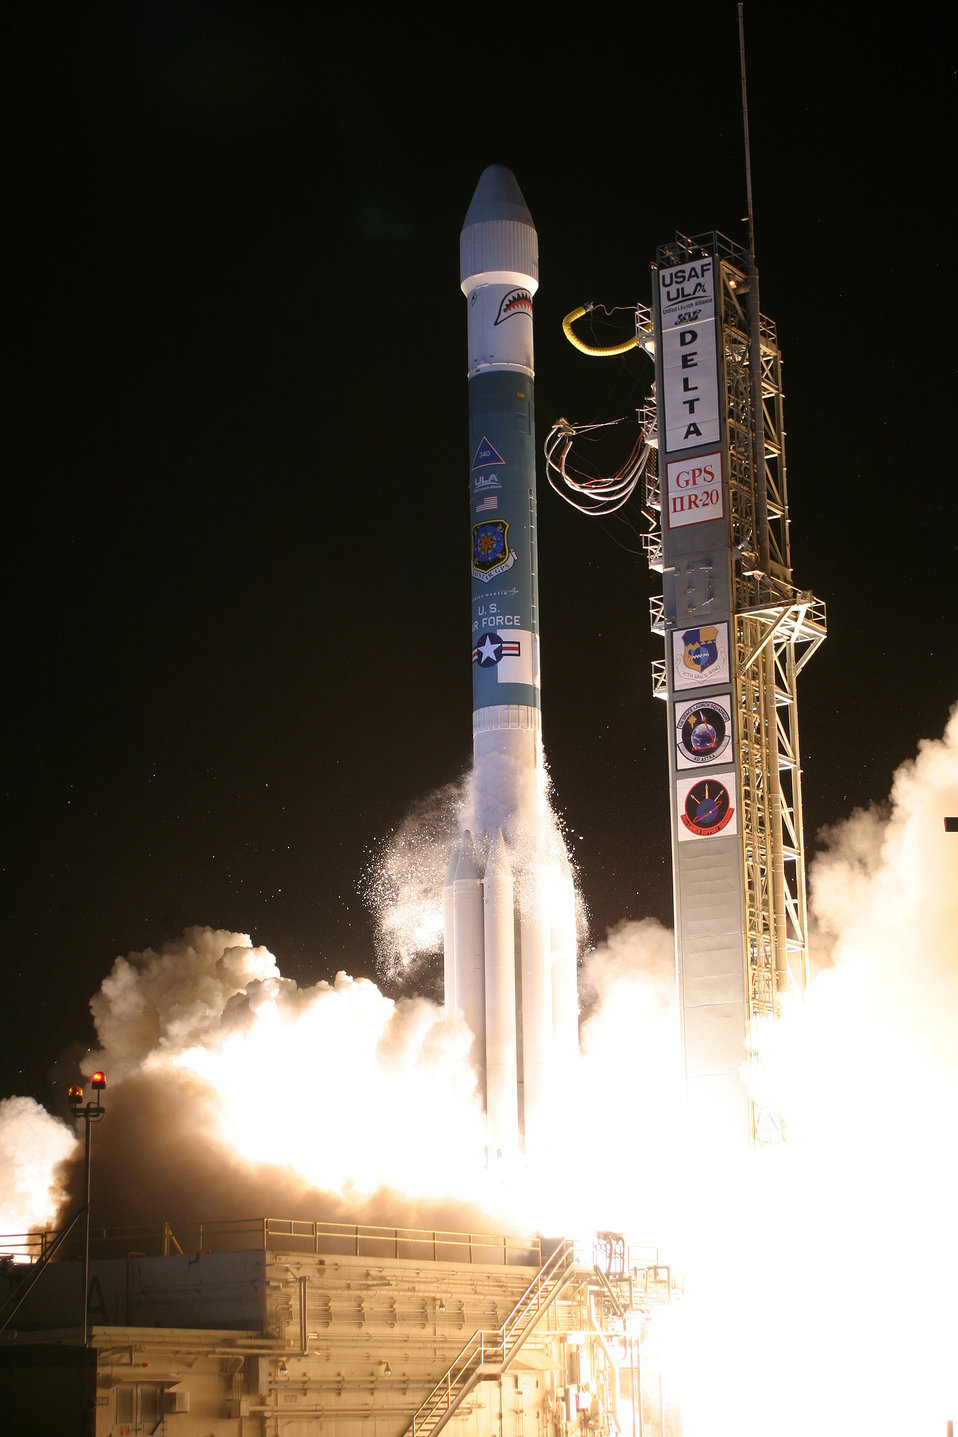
2nd, 19th SOPS assume control of new GPS satellite

A Delta II rocket carrying the Air Force's GPS IIR-20(M) satellite lifts off from Cape Canaveral Air Force Station, Fla., at 4:34 a.m. Eastern Daylight Time March 24. Space systems operators with the 2nd and 19th Space Operations squadrons at Schriever Air Force Base, Colo., took control of the new satellite 68 minutes after launch.